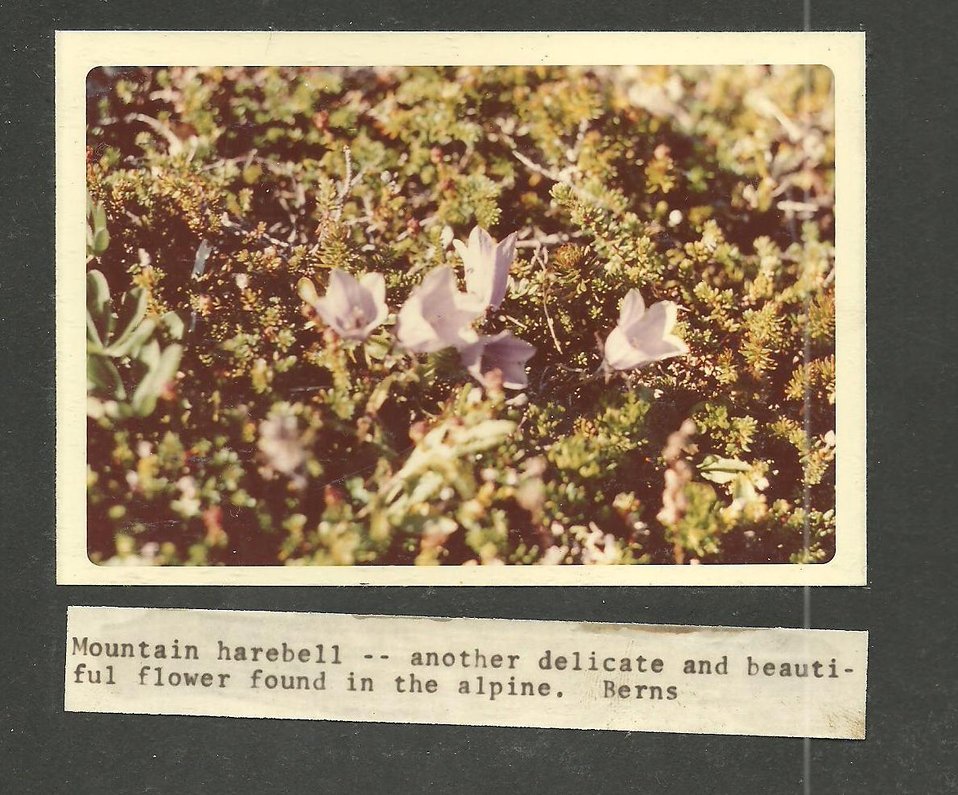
(1970) Mountain Harebell

Credit: USFWS

Source and Contact: Kodiak National Wildlife Refuge